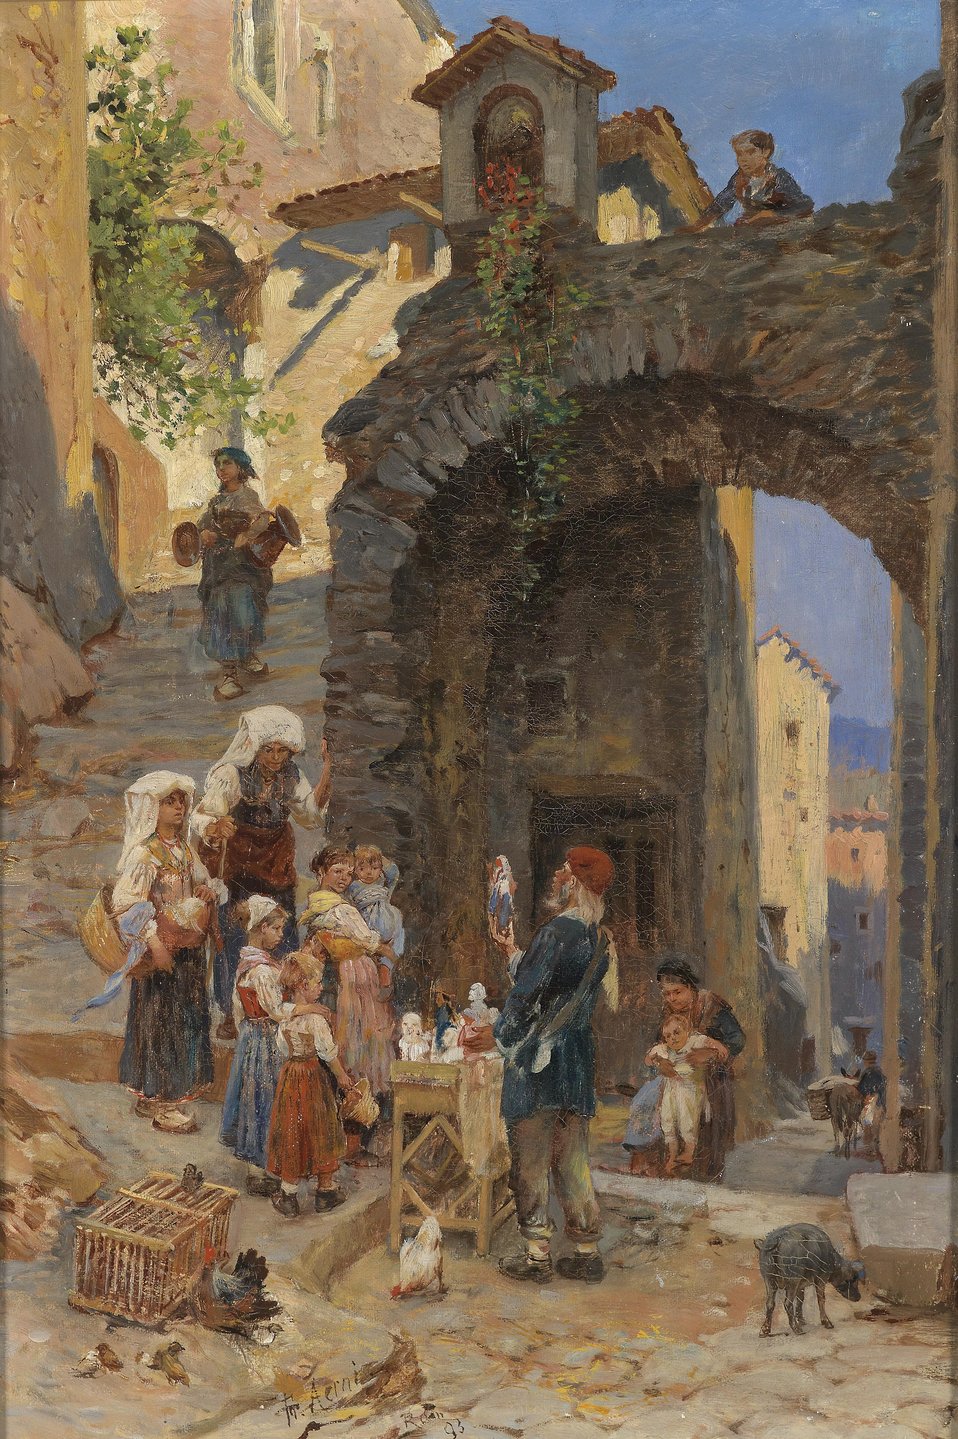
Deutsch: Römischer Spielwarenhändler, signiert, bezeichnet und datiert Fr. Aerni Rom (18)93, Öl auf Leinwand, 47,5 x 33 cm